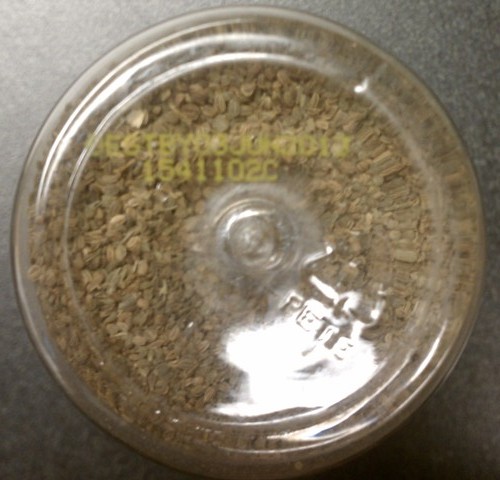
RECALLED - Organic Celery Seed

December 16, 2011 - Product Recall - Swanson Health Products Recalls Swanson Organic Celery Seed.